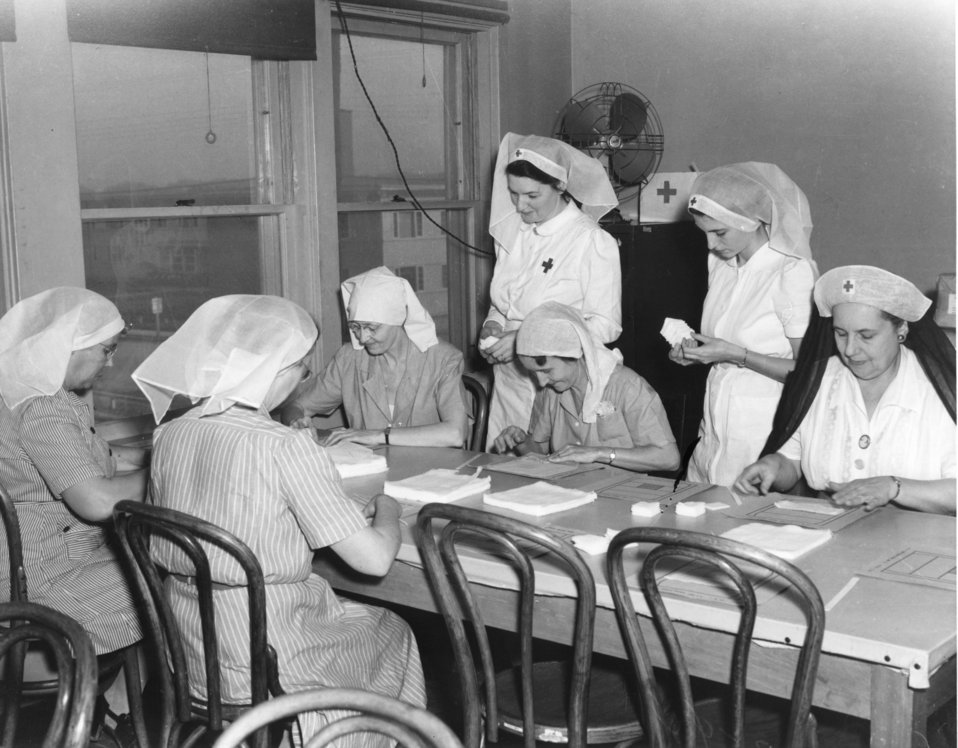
Medical at Oak Ridge